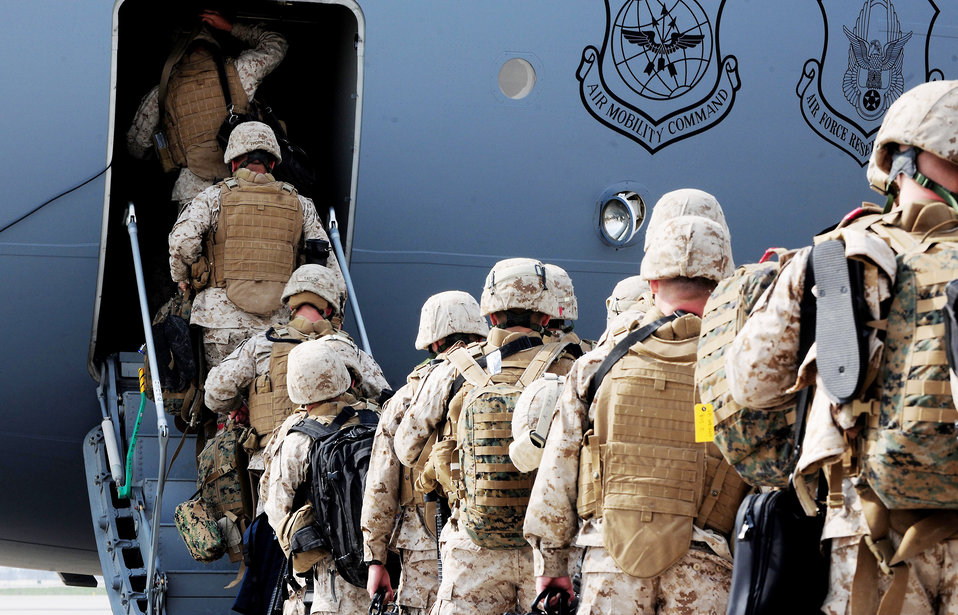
Manas Airmen move troops into Afghanistan

Marines walk onto a C-17 Globemaster III en route to Afghanistan April 2, 2010 at the Transit Center at Manas, Kyrgyzstan. Thousands of Marines, Soldiers, Airmen and coalition troops transit through here each month in support of Operation Enduring Freedom. In March, 376th Expeditionary Logistics Readiness Squadron Airmen pushed through 50,000 multinational, U.S. and coalition troops. The Marines are from the 7th Engineer Support Battalion, Marine Corps Base Camp Pendleton, Calif.